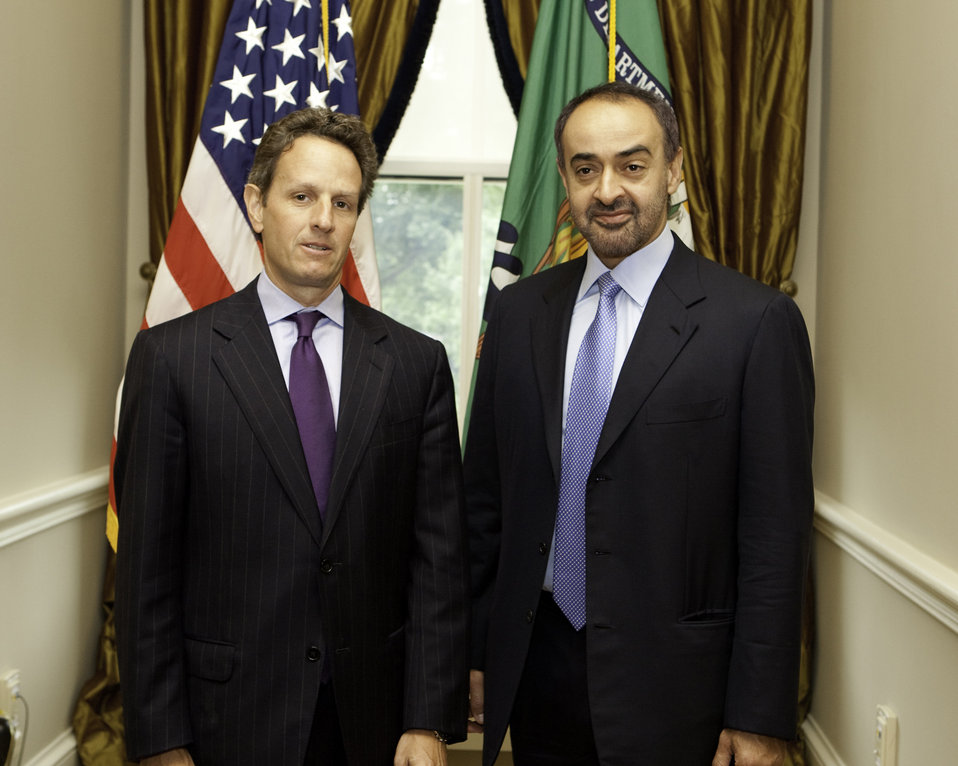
Crown Prince of Abu Dhabi Sheikh Mohamed bin Zayed Al Nahyan

On September 8, 2009, Secretary Geithner met with Crown Prince of Abu Dhabi Sheikh Mohamed bin Zayed Al Nahyan.